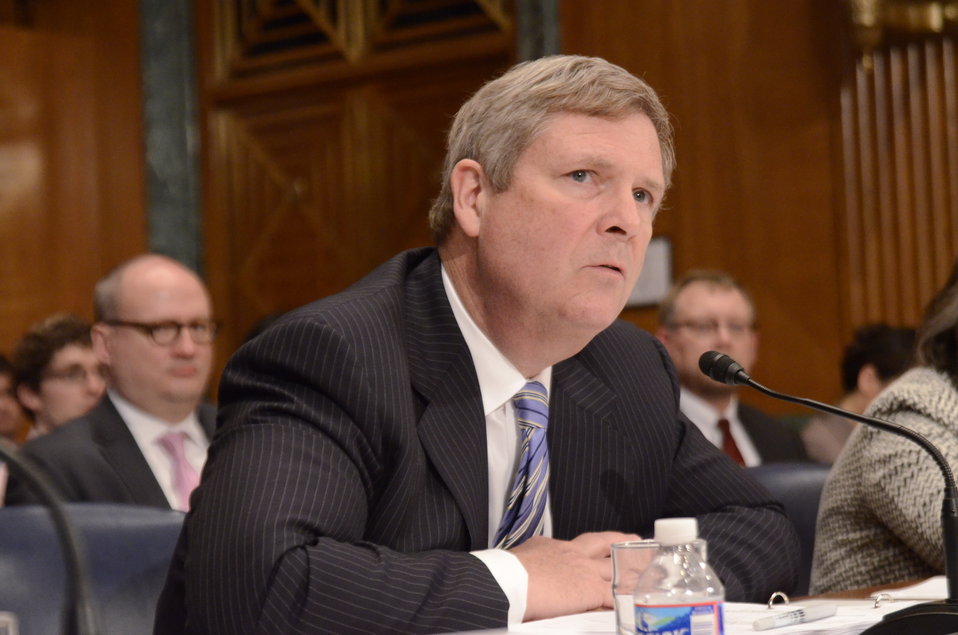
Agriculture Secretary Tom Vilsack testifies before the Senate Agriculture Appropriations Committee on the fiscal year 2013 budget at the Dirksen Senate Office Building in Washington, D.C., on Thursday, March 29, 2012.